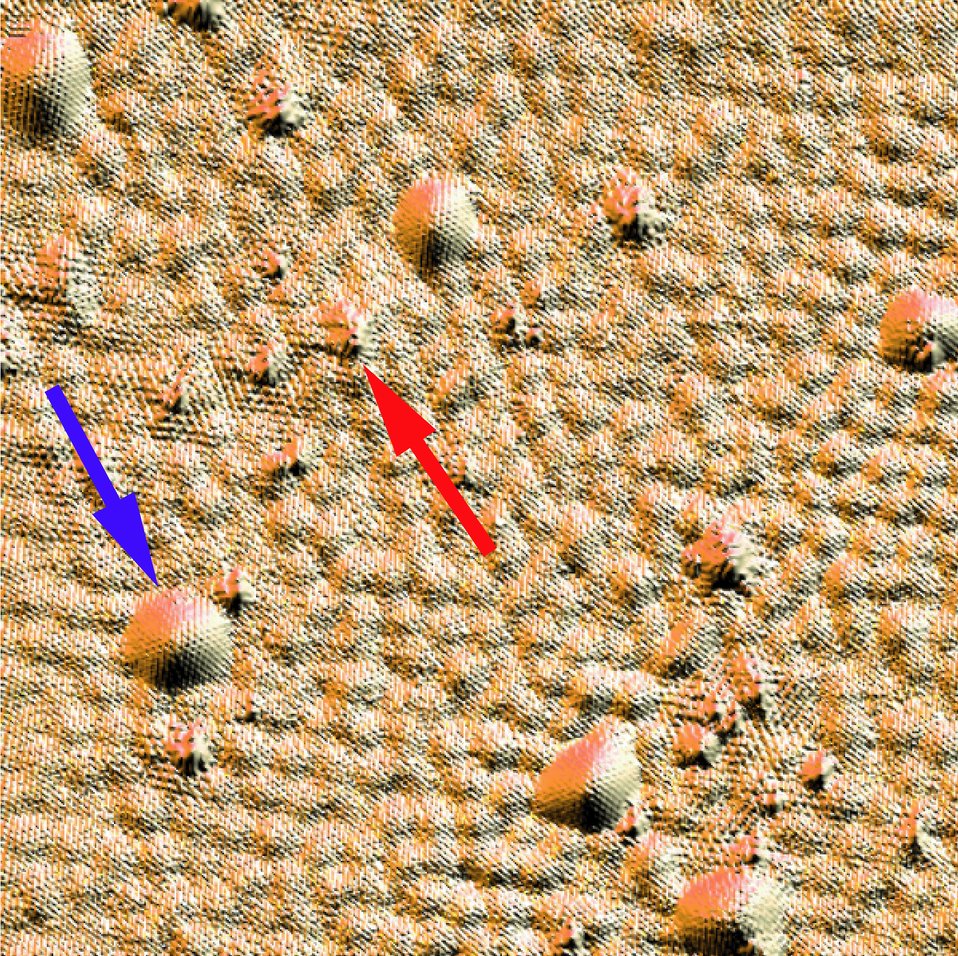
Speed Bumps Less Important Than Potholes for Graphene

Comparison of an STM topographic image of a section of graphene sheet (top left) with spectroscopy images of electron interference at three different energies shows strong interference patterns generated by atomic scale defects in the graphene crystal (red arrows) but only modest disturbances caused by larger scale bumps in the sheet (blue arrows.) Analysis of the ripples shows that the electron energy in graphene is inversely proportional to its wavelength, just like light waves. The area imaged is approximately 40 nanometers square.